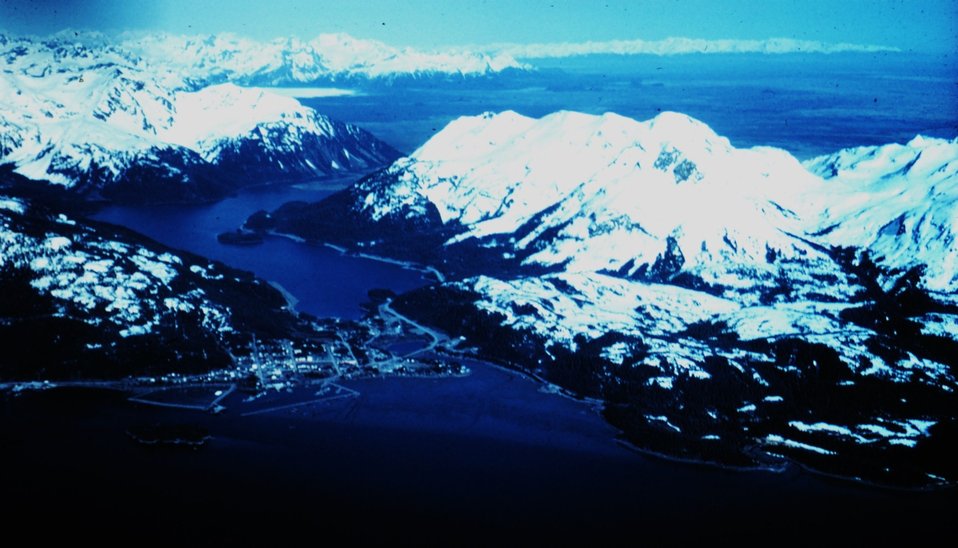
The entrance to Valdez